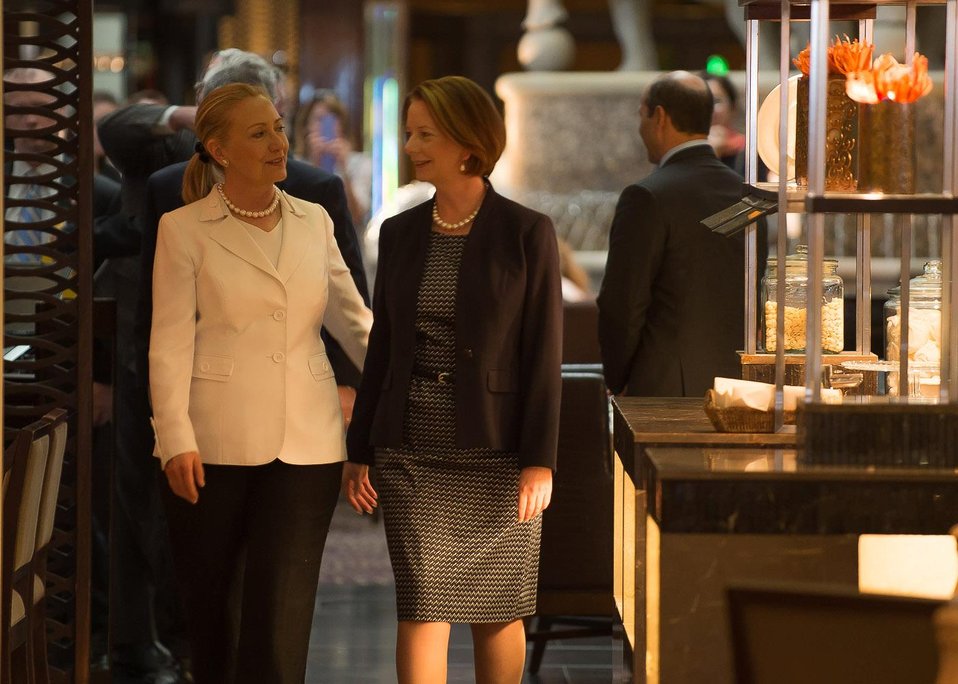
Secretary Clinton Meets With Australian Prime Minister Gillard

U.S. Secretary of State Hillary Rodham Clinton meets with Australian Prime Minister Julia Gillard in Perth, Australia, November 13, 2012. [U.S. Embassy in Canberra, Australia photo by Travis Longmore/ Public Domain]